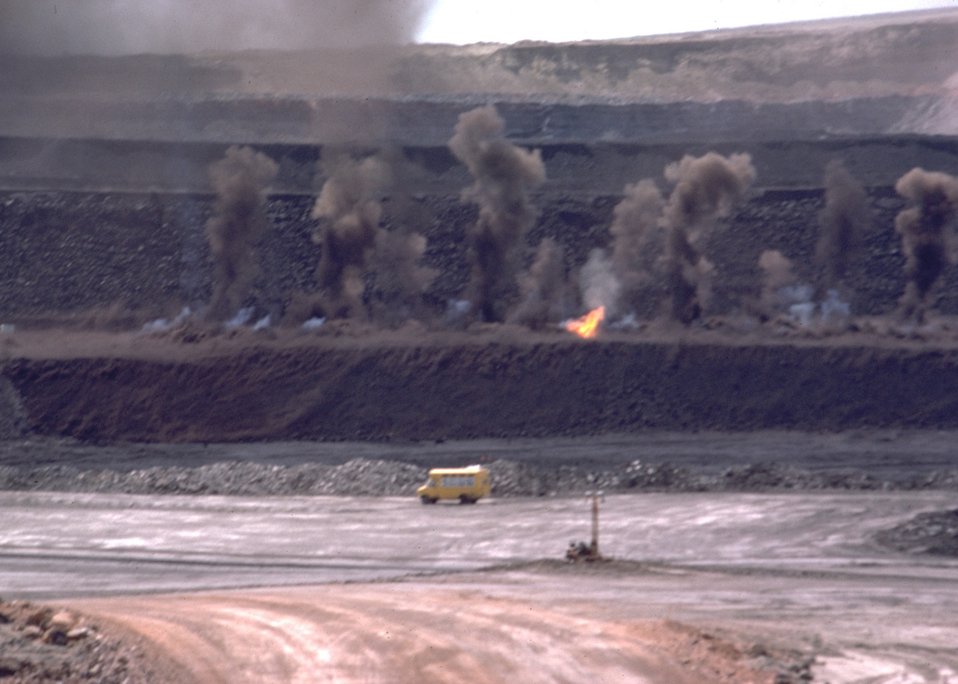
Coal bed methane development.